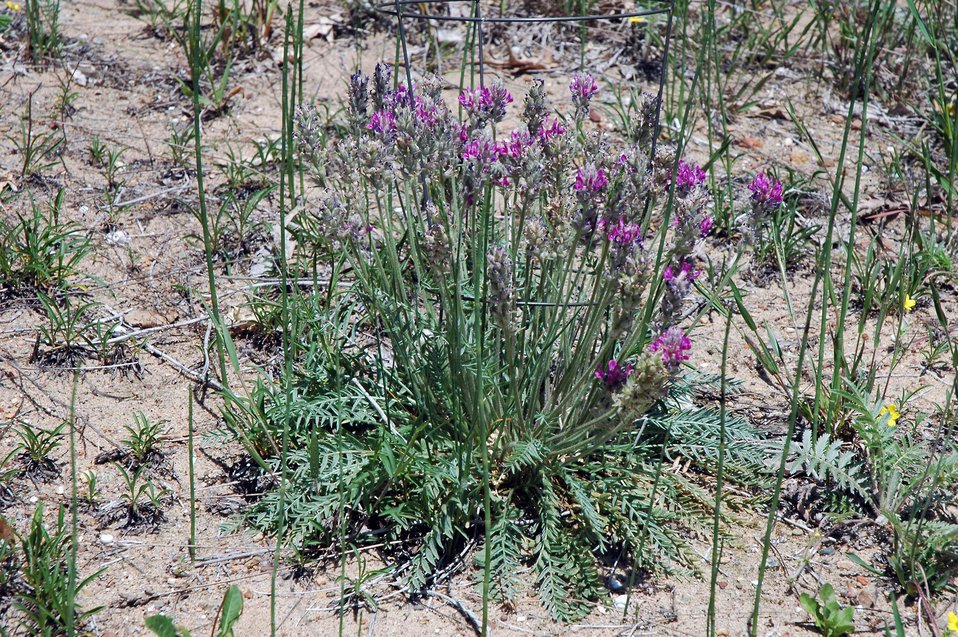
Fassett's locoweed is federally threatened. It is found only in Wisconsin on lake shorelines. Photo by USFWS; Joel Trick